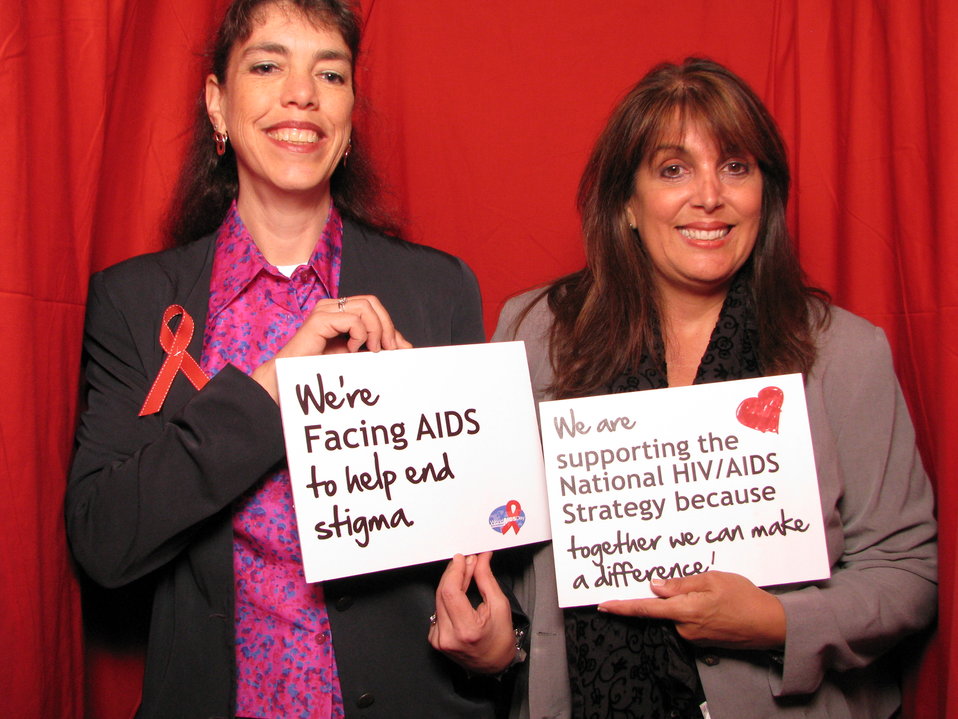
We're Facing AIDS to help end stigma. We are supporting the National HIV/AIDS Strategy because together we can make a difference!

From the AIDS.gov photo booth at the U.S. Conference on AIDS, September 2010 (Orlando, FL).